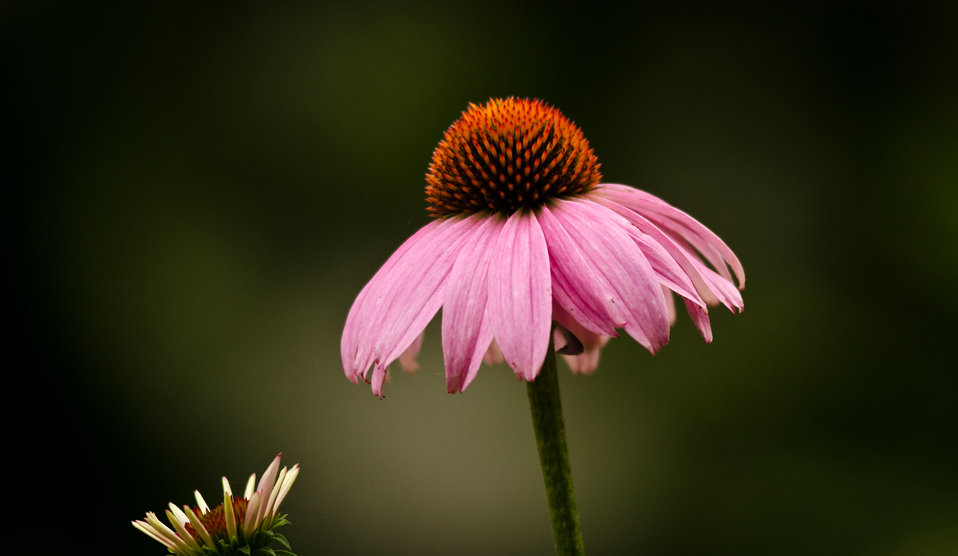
Various types of pollinator flowers are found throughout Nick’s Organic Farm is owned by Nick Maravell in Adamstown, MD on Friday, July 12, 2013. The farm produces Black Angus beef, chicken, turkey, eggs, hay, soybeans, corn, alfalfa, orchard grass, rye; and other crops. The cattle are 100% grass-fed receiving certified organic pasture, certified organic hay (in winter), water and mineral salts mixed with sea kelp. The cattle are not fed hormones, antibiotics or animal products. Poultry feed from grain is ground from organic grain. The poultry also graze on organic pastures. The farm has conducted on-farm research with federal, state and non-profit agencies to refine organic practices. An organization such as the U.S. Department of Agriculture (USDA) Agricultural Research Service (ARS) center in Beltsville has been able to conduct research to improve organic crops and to breed and manage the cattle so that they have.